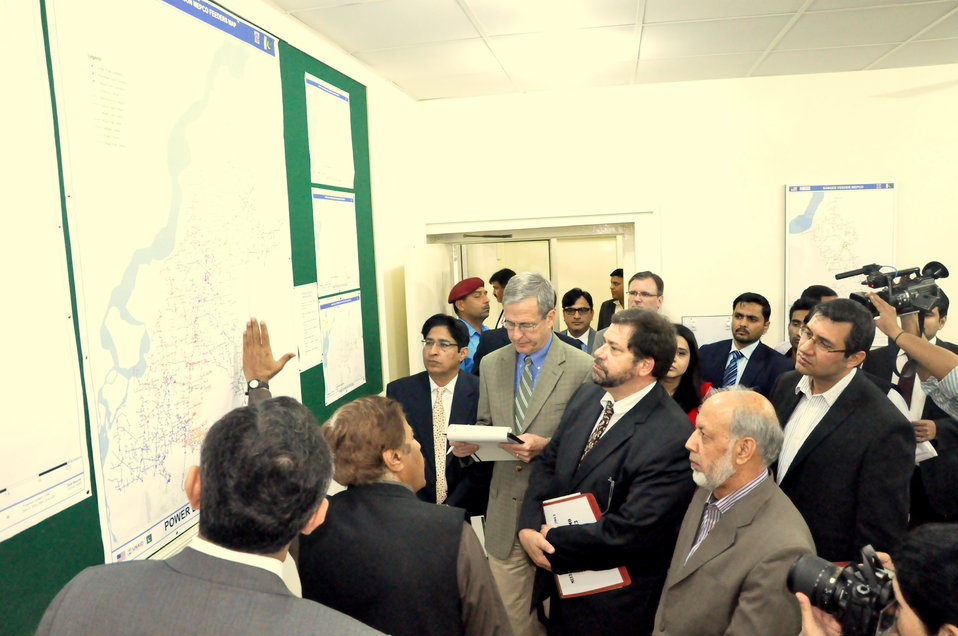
USAID equips MEPCO with state-of-the-art Planning and Engineering Computer Center

USAID Pakistan Mission Director, Jonathan Conly being briefed about the new digitized mappings generated using new planning and engineering tools.